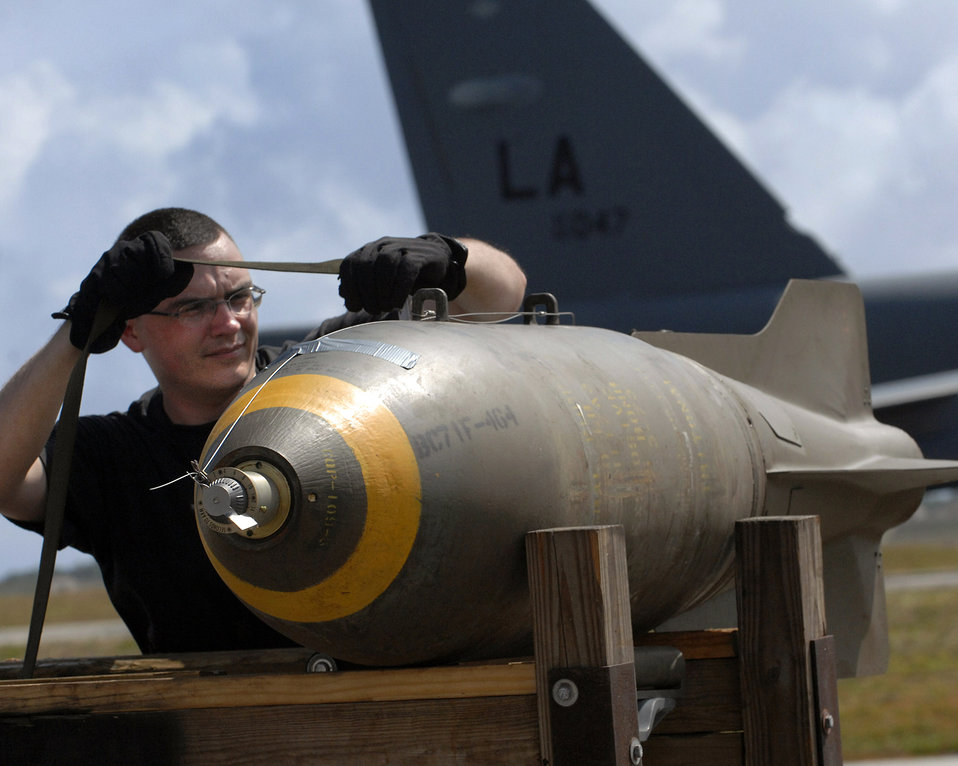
B-52 presence demonstrates global strike capabilities

Airman 1st Class Jason Stromberg straps down a live 750 pound M117 bomb onto a specialized bomb lift for loading on to a B-52 Stratofortress. The 96th Expeditionary Bomb Squadron will later drop the bombs on the Farallon de Medinilla Target Range; an uninhabited island located about 150 miles north of Guam. The bomber's participation in constant training helps emphasize the U.S. bomber presence, demonstrating U.S. commitment to the Pacific region. Airman Stromberg is with the with the 36th Expeditionary Aircraft Maintenance Squadron and is deployed from Barksdale Air Force Base, La.